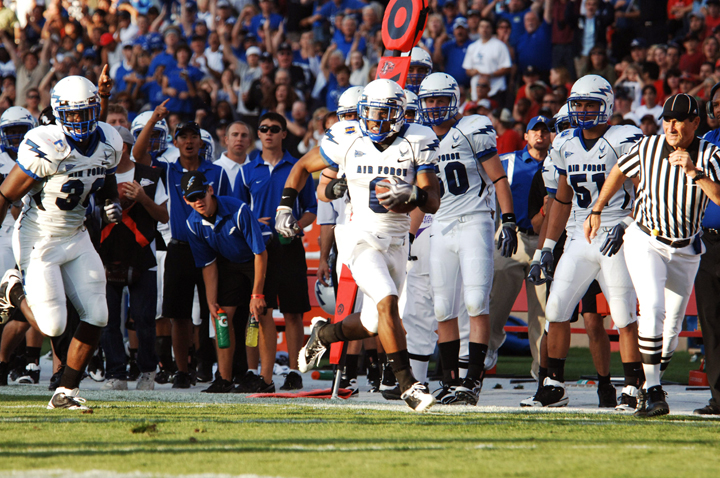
Football: Falcons feast on turnovers, down New Mexico 37-13

U.S. Air Force Academy defensive back Jon Davis races down the sidelines on his way to a 38-yard score on an interception return during football action Sept. 19, 2009, at Albuquerque, N.M.